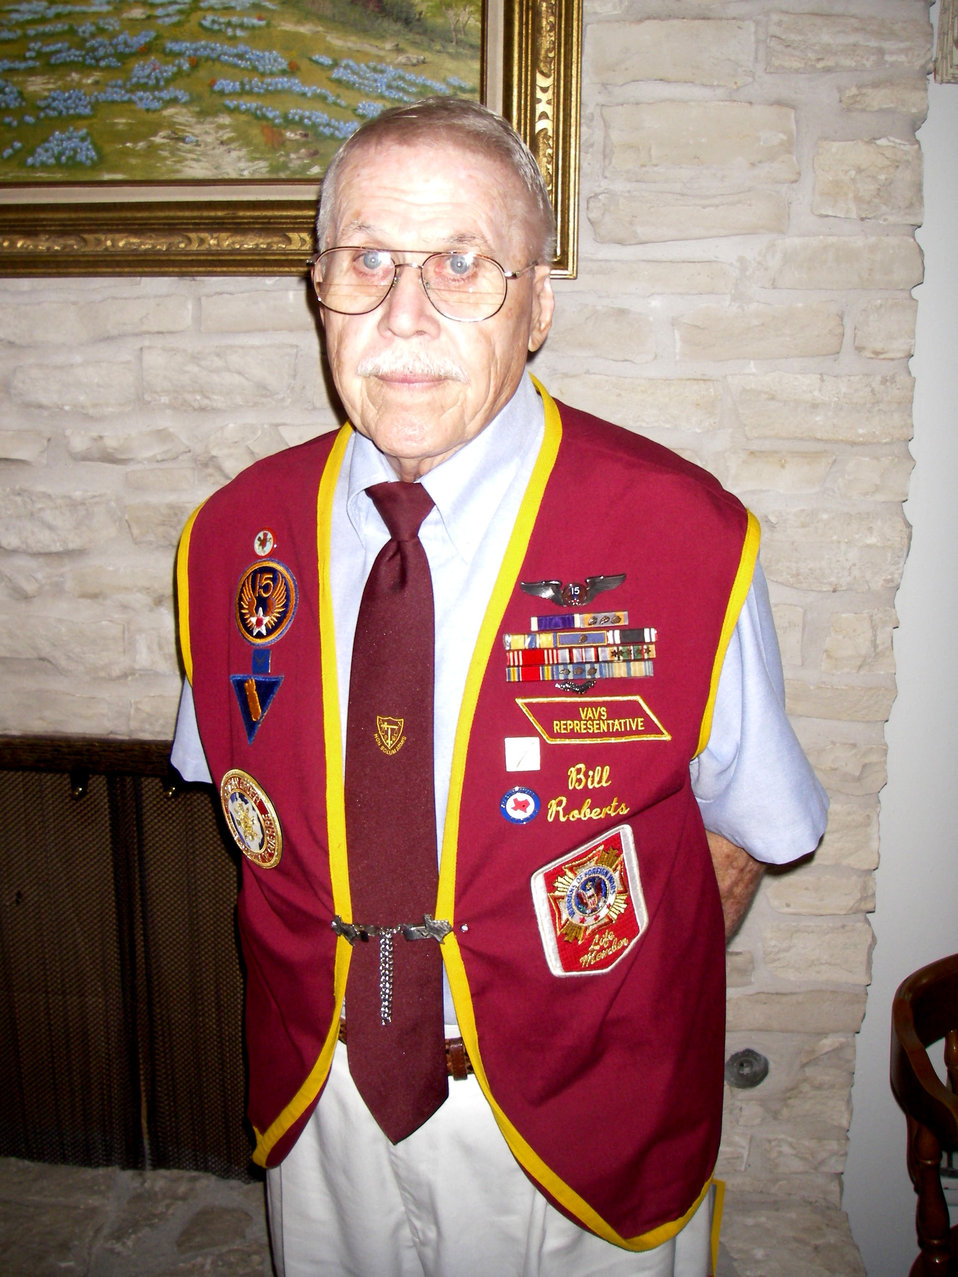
Former POWs carry on American resolve

Retired Maj. William Roberts Jr. is a former POW who was a B-17 Flying Fortress aerial gunner enlisted in the Army Air Corps when his aircraft was shot down July 7, 1944, near Velehrad, Czech Republic. He spent 11 months as a POW in various camps in Poland before being liberated by British forces in May 1945.